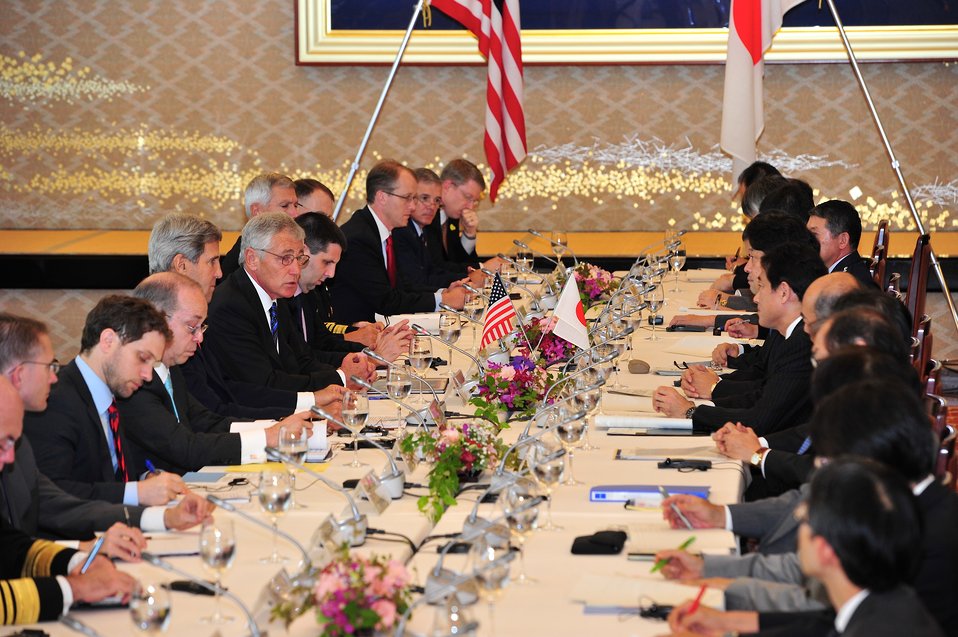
Defense Secretary Hagel Delivers Remarks at the U.S.-Japan Security Consultative (2 2) in Tokyo

U.S. Secretary of Defense Chuck Hagel makes an opening statement at the U.S.-Japan Security Consultative (2 2) meeting at Iikura Guest House in Tokyo, October 3, 2013.